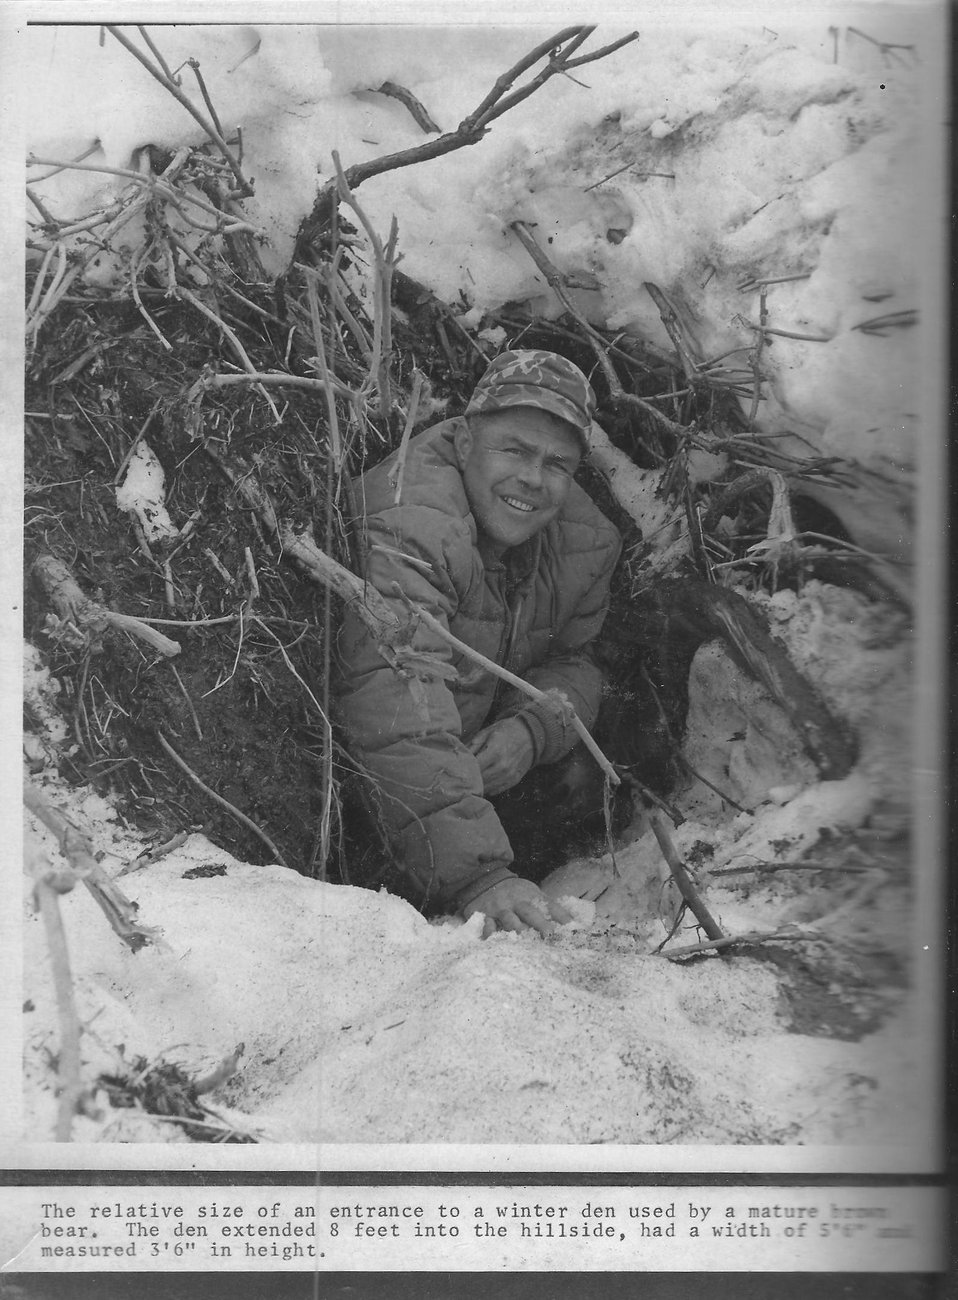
(1969) Winter Den Entrance

Credit: USFWS

Source and Contact: Kodiak National Wildlife Refuge